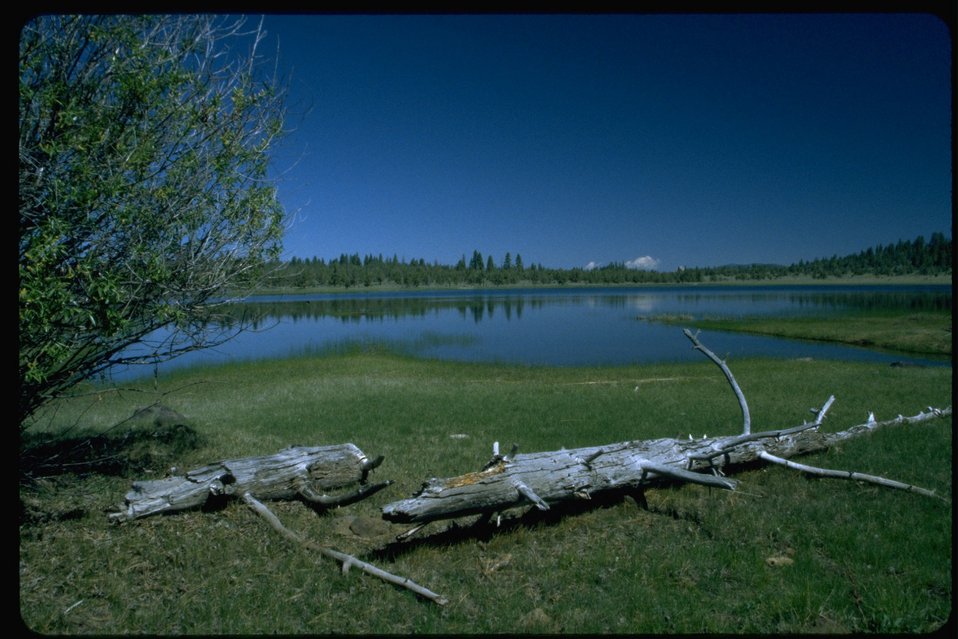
Upper Midway Reservoir along Hourse Camp Road.